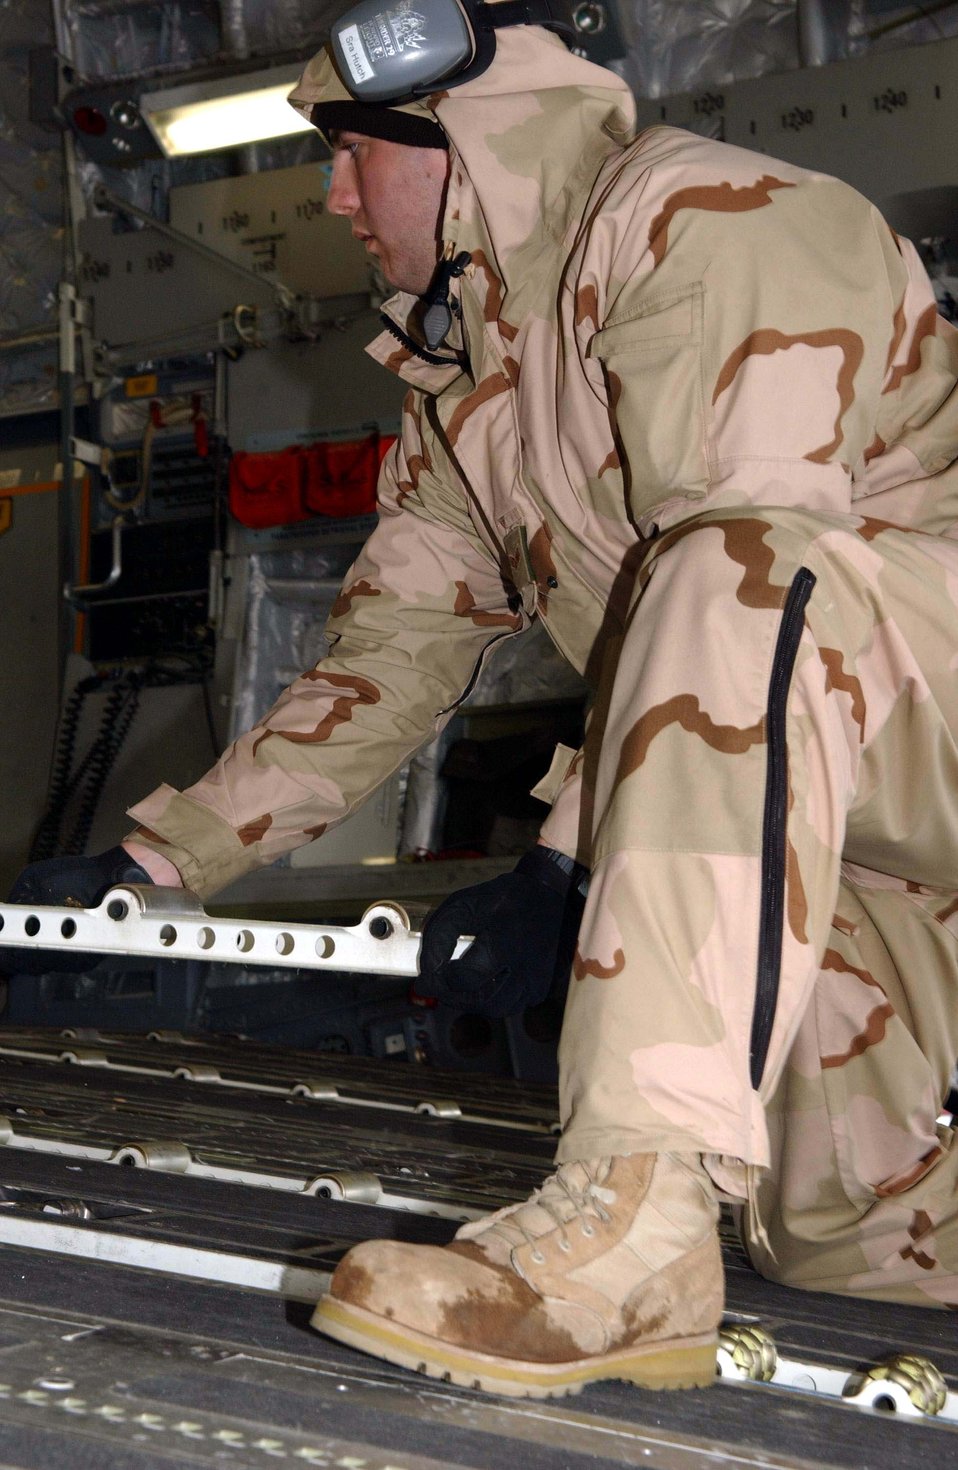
Expeditionary logistics team carries the load

BAGRAM AIR BASE, Afghanistan -- Senior Airman Robert Hutchinson prepares a C-17 Globemaster III to receive cargo by flipping over the tracks in the aircraft floor for easy loading. Airman Hutchinson is an air transportation specialist with the 455th Expeditionary Logistics Readiness Squadron here, deployed from Dobbins Air Reserve Base, Ga.